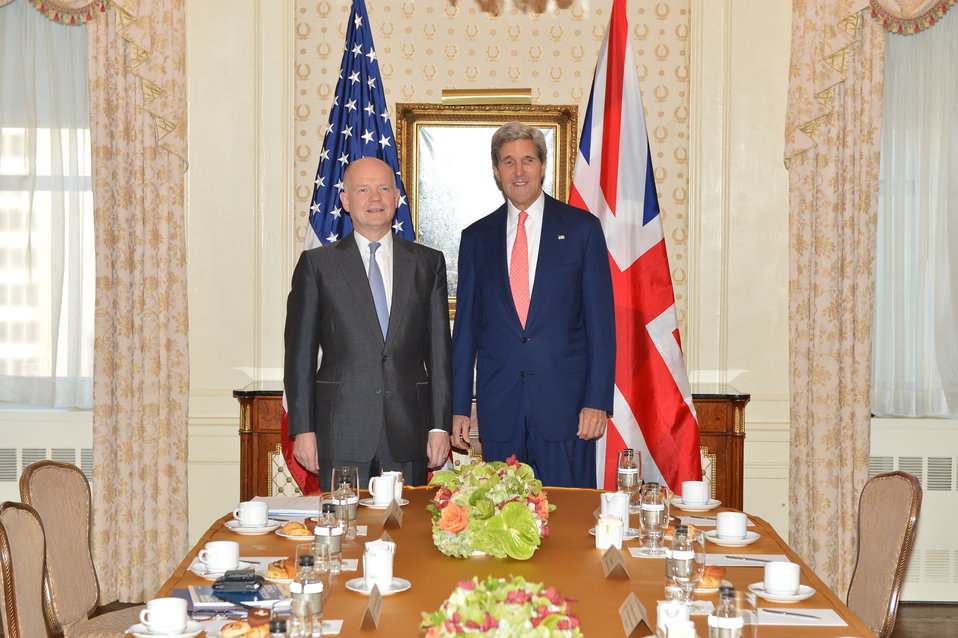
Secretary Kerry Meets With UK Foreign Secretary Hague

U.S. Secretary of State John Kerry holds a bilateral meeting with UK Foreign Secretary William Hague in New York City on September 23, 2013.